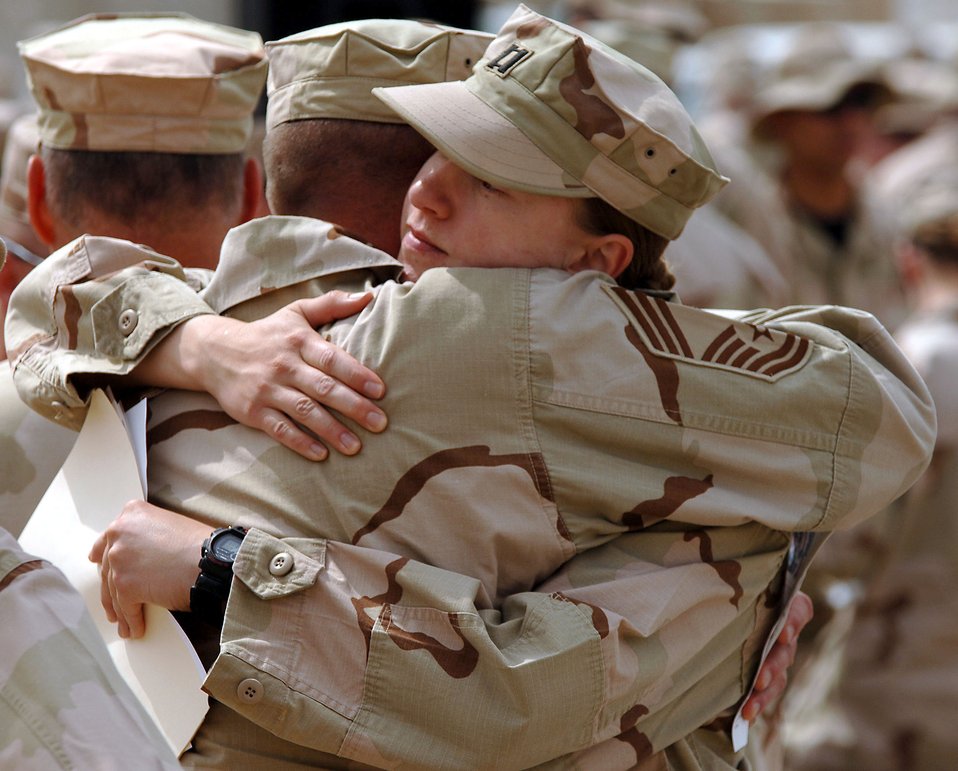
Memorial held for Airman killed in Operation Iraqi Freedom

A chief master sergeant consoles Capt. Stephanie Root after a memorial service for Tech. Sgt. Walter Moss on Saturday, April 1, 2006, at Sather Air Base, Iraq. Sergeant Moss, an explosive ordnance disposal technician, died in an explosion during safing operations near Baghdad March 29. Captain Root was Sergeant Moss' 447th Expeditionary Civil Engineer Squadron EOD flight commander. Sergeant Moss was the first Airman from Sather AB killed in action during Operation Iraqi Freedom.